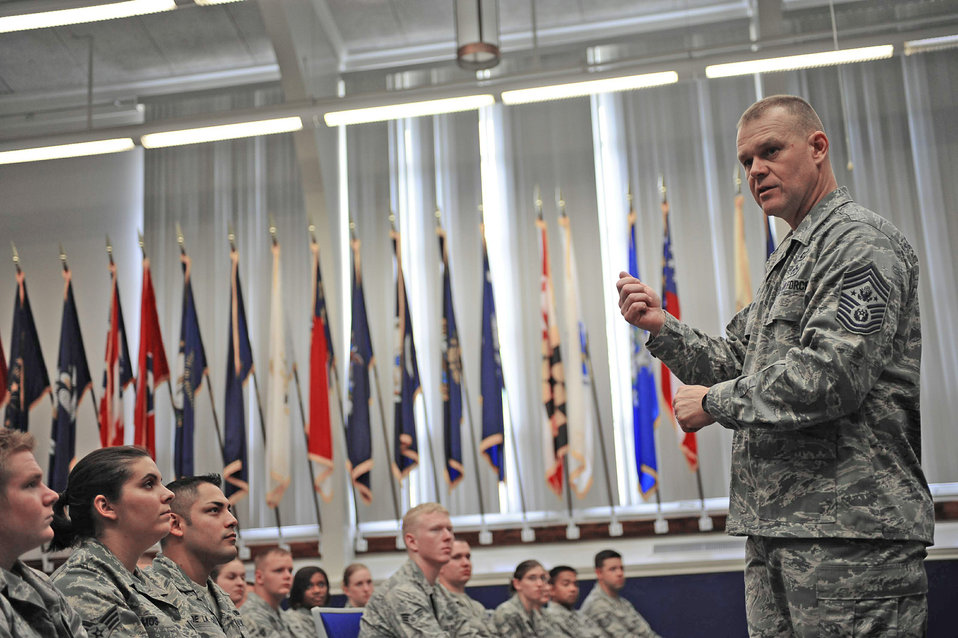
CMSAF visits Hurlburt Airmen

Chief Master Sgt. of the Air Force James A. Roy speaks to Airman
Leadership School students about the importance of being a good leader and
mentor Sept. 22, 2009, at Hurlburt Field, Fla.